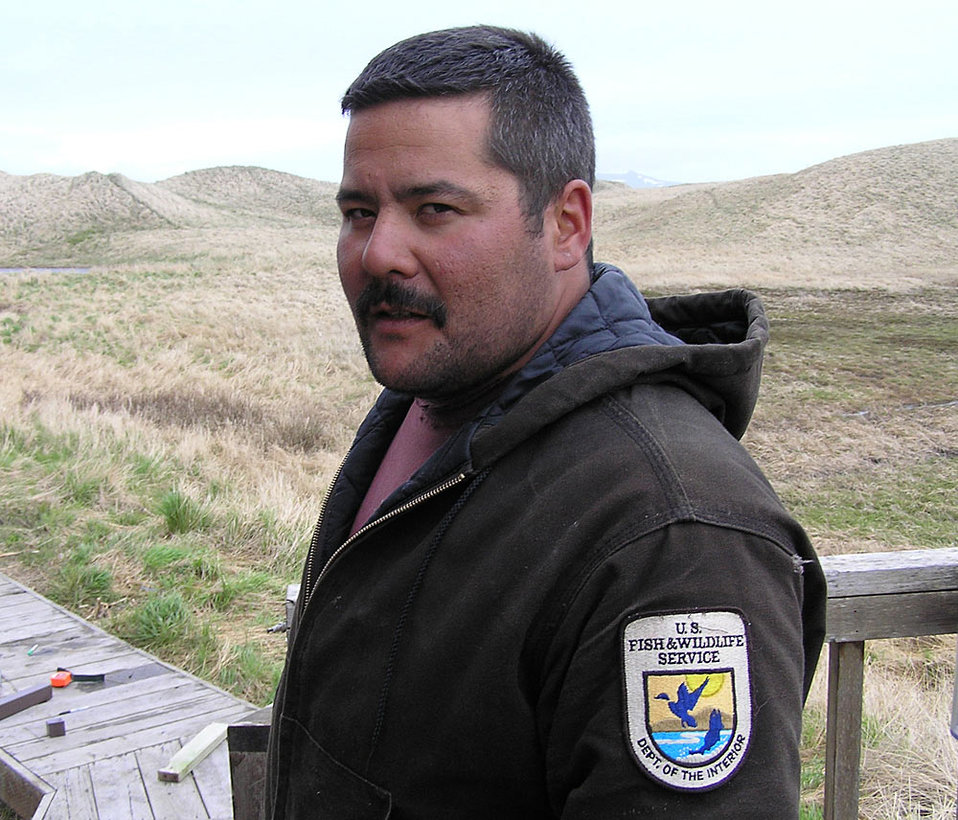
Jack Savo-Alaska Region

Army veteran Jack Savo is a Maintenance Mechanic at Togiak National Wildlife Refuge.